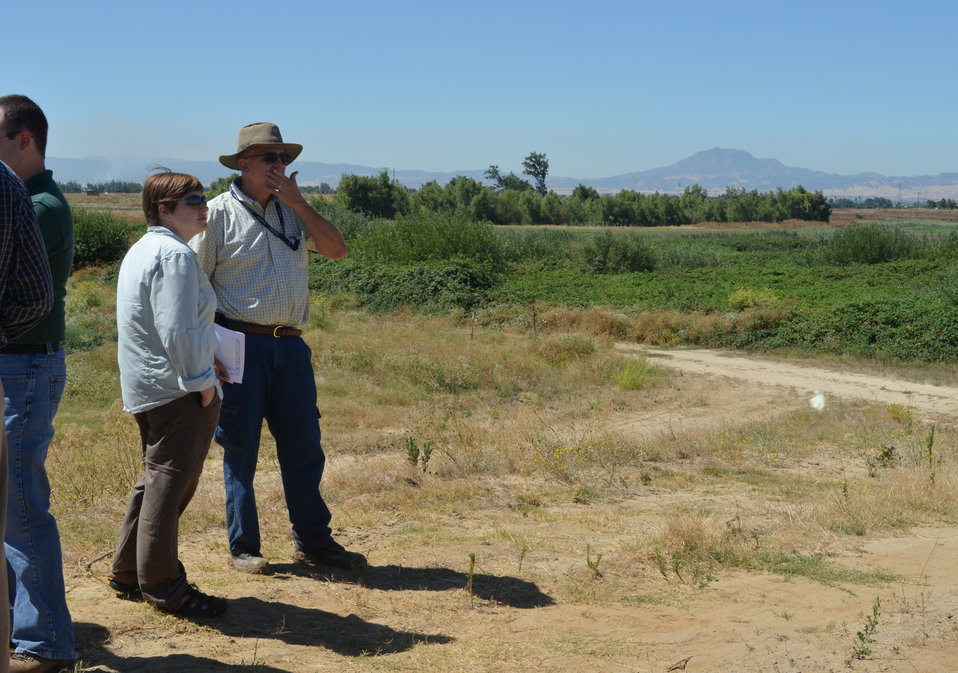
Horseshoe Bend levee

U.S. Army Corps of Engineers Sacramento District lead planner Brooke Schlenker (left) and civil engineer Larry Nemetz survey the Horseshoe Bend levee on Bethel Island, Calif., Aug. 16, 2011 during a site visit with partner agencies. The Corps is studying how best to strengthen the levee, the weakest point in the levee system surrounding the island. The project falls under the CALFED Levee Stability Program, an effort to quickly fix urgent levee problems in the imperiled Sacramento-San Joaquin Delta while a longer-term plan for reducing flood risk throughout the Delta is developed.